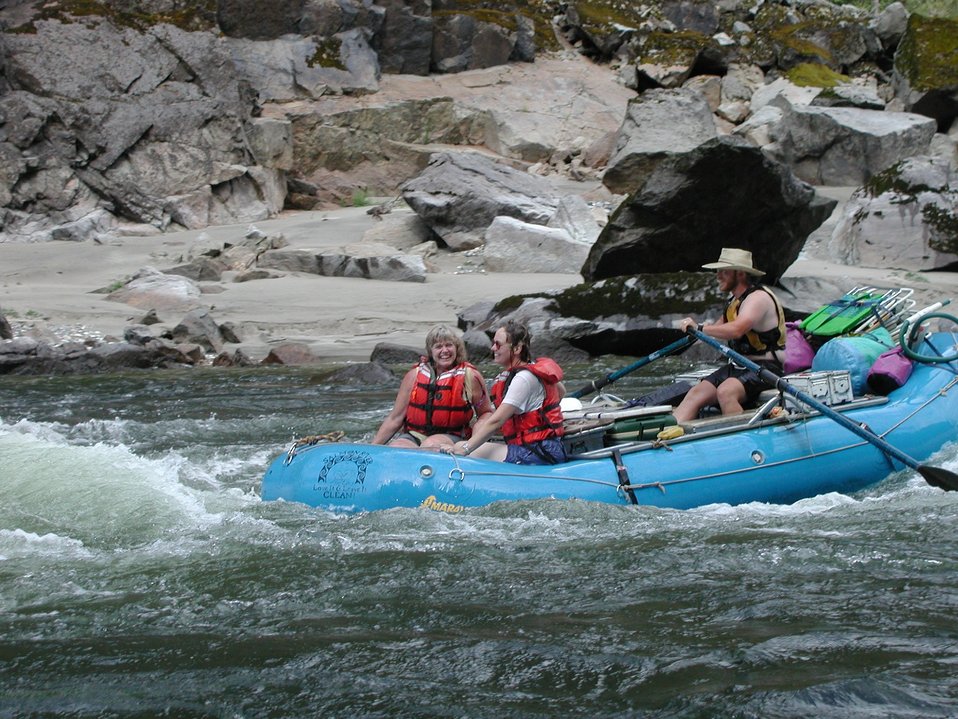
Recreation Rafting on Lower Salmon River Cottonwood Field Office UCSC Upper Columbia Salmon Clearwater District